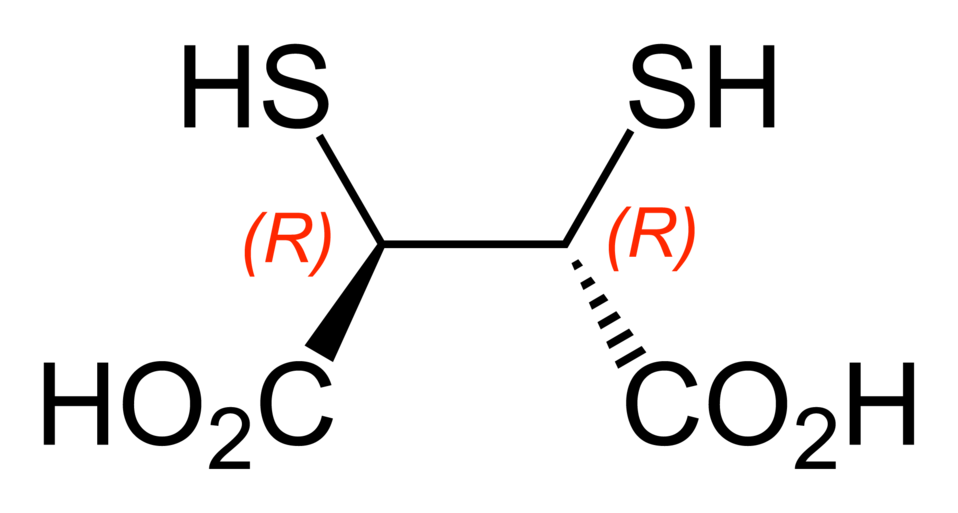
Skeletal formula of (2R,3R)-2,3-dimercaptosuccinic acid, C4H6O4S2. Structure drawn in ChemBioDraw Ultra 12.0.